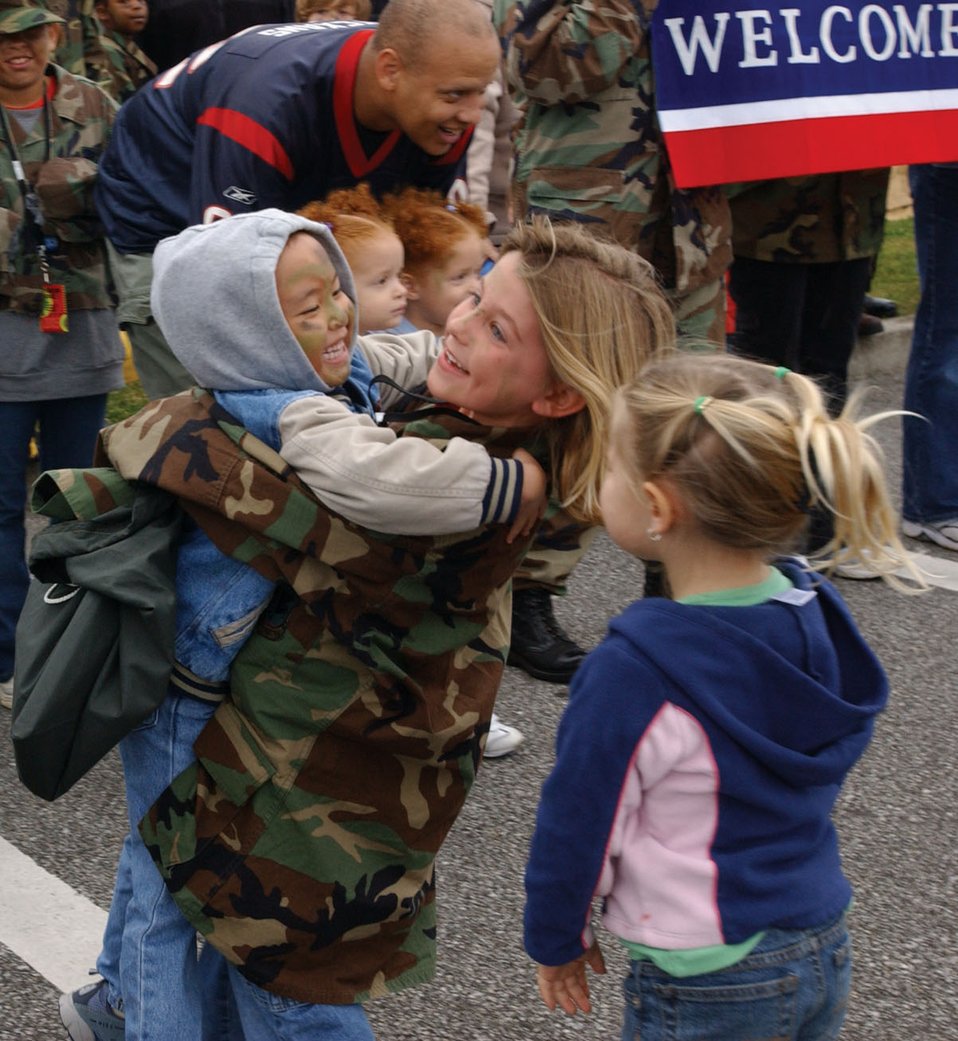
Kadena children get deployment experience

KADENA AIR BASE, Japan -- Mikaila Bantugan welcomes 6-year-old Jordan Deremer home from her simulated deployment to Iraq as part of an Operation Kids Understanding Deployment Operations event March 12. More than 320 children participated in the event to learn more about how their military parents deploy. Mikaila is the daughter of Tech. Sgt. Michael Bantugan of the 353rd Maintenance Squadron. Jordan is the daughter of Staff Sgt. David Deremer of the 18th Communications Squadron.